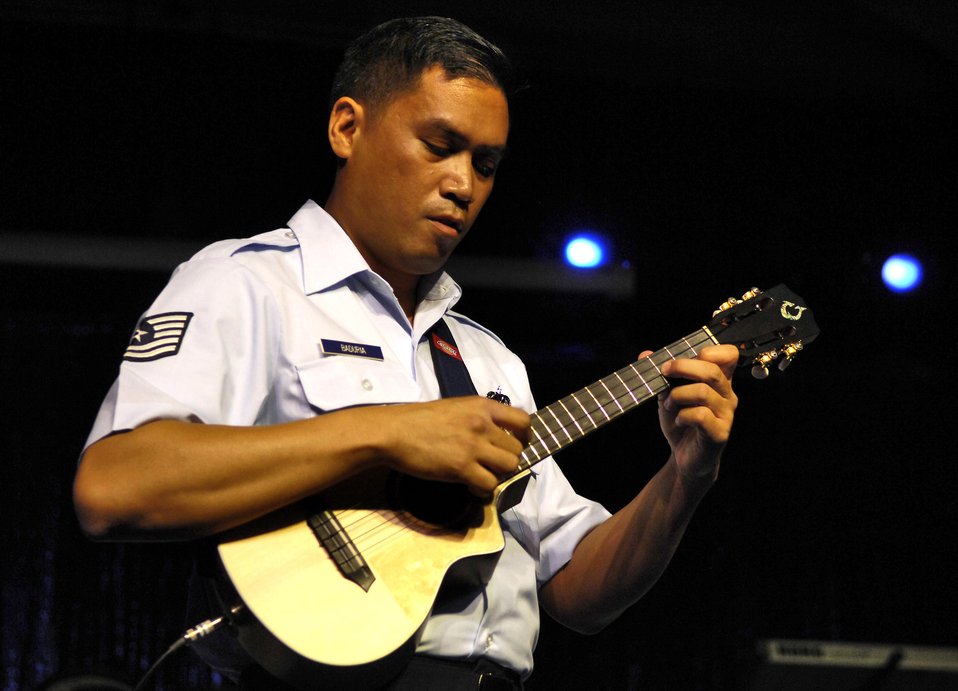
Uniquely ukulele: Airman plays from the heart

Tech. Sgt. Daniel Baduria plays his ukulele as the opening act for Tops In Blue Sept. 12 at the Waikiki Shell in Honolulu. Sergeant Baduria played as part of the Heritage to Horizons theme of the Air Force's 60th anniversary. His father, Donald Baduria, was an Airman with the Strolling Strings Trio in the Air Force's Tops In Blue entertainment showcase in the 1950s and began teaching him to play the ukulele at age four. Sergeant Baduria, who lost his father to cancer more than 20 years ago, honored his memory during the performance. Tops In Blue, the Air Force's signature entertainment group, gave a free performance for the public to celebrate Air Force Week Honolulu and the Air Force's 60th anniversary. Sergeant Baduria, is an aircraft fuel systems specialist with the Hawaii Air National Guard's 154th Wing.